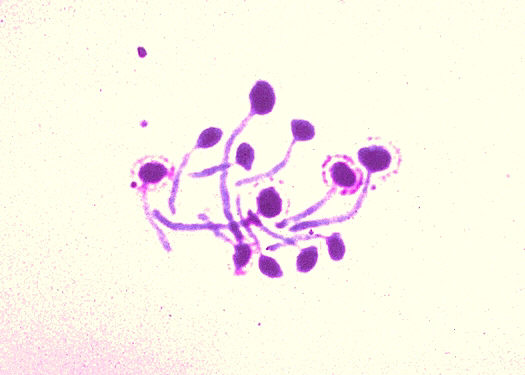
Candida albicans showing germ tube production in serum. Gram stain.